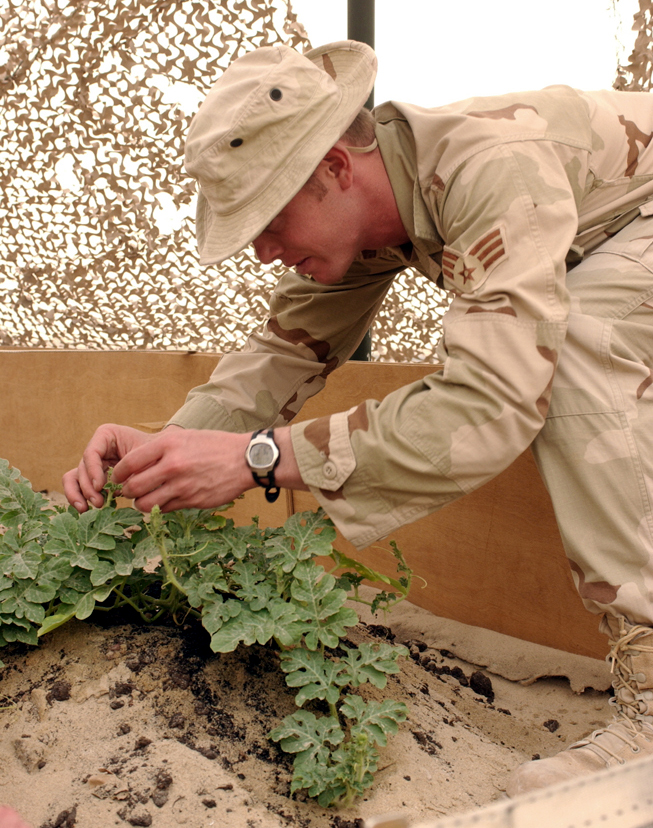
Oasis in the desert

OPERATION IRAQI FREEDOM (AFPN) -- Senior Airman Dusty Bailey prunes his watermelon plants at a forward-deployed location in Southwest Asia. Bailey is assigned to the 379th Precision Measurement Equipment Laboratory.